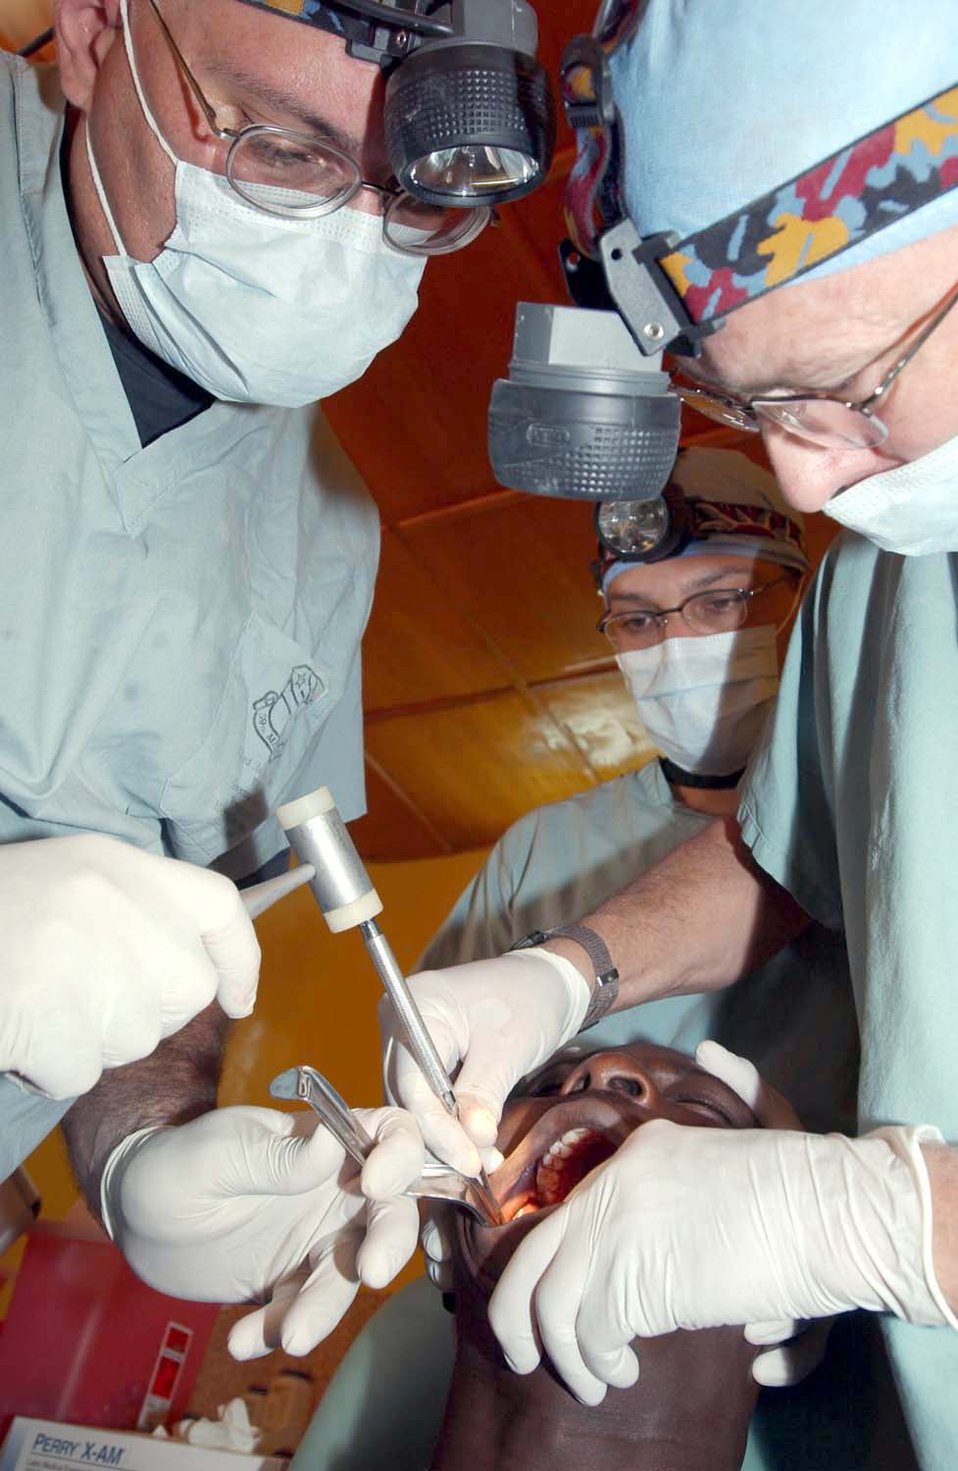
Dental care

CAMP TONDIBIAH, Niger -- (Left to right) Maj. (Dr.) Joe Alvarez, Staff Sgt. Humerto Rodriquez and Lt. Col. (Dr.) Victor Brown manually chisel the bone away from a Nigerian man's tooth. The three-man dental team is part of a 12-person medical team from Air Force Reserve Command who are here on a humanitarian mission. Dr. Alvarez is a dentist from Wright-Patterson Air Force Base, Ohio; Sergeant Rodriquez is a dental technician assigned to Lackland AFB, Texas; and Dr. Brown is a dentist from Niagra Falls, N.Y.